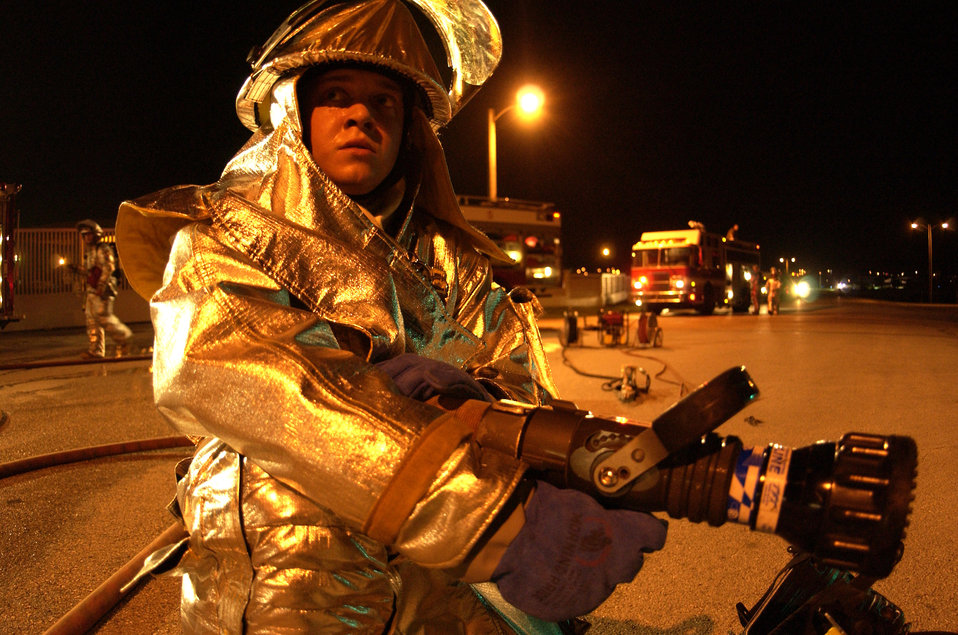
Exercise at Andersen

Airman 1st Class Kyle Houseman responds to a simulated vehicle accident at Andersen Air Force Base, Guam, during the Beverly Palm 06-07 exercise on July 10. The exercise is held several times a year to sharpen the mobility and wartime capabilities of Airmen. Airman Houseman is assigned to the 36th Civil Engineer Squadron.